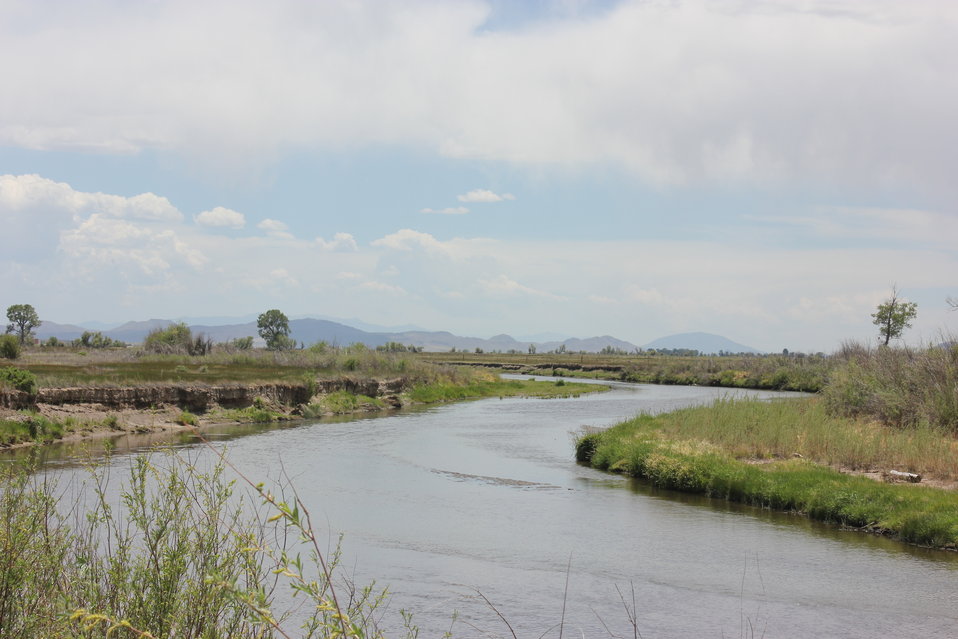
Rio Grande River